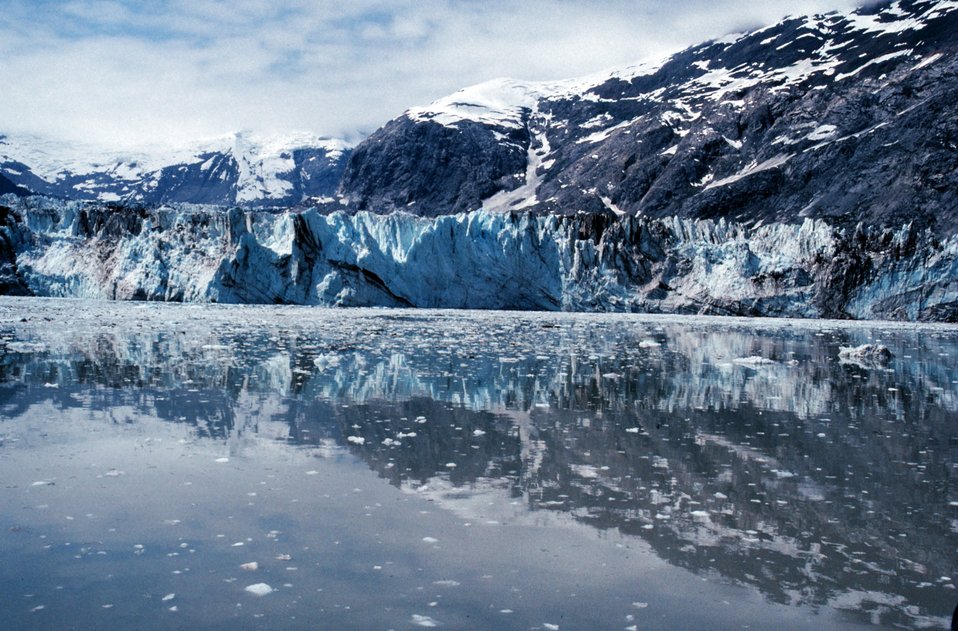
Glacier Bay - glacial views